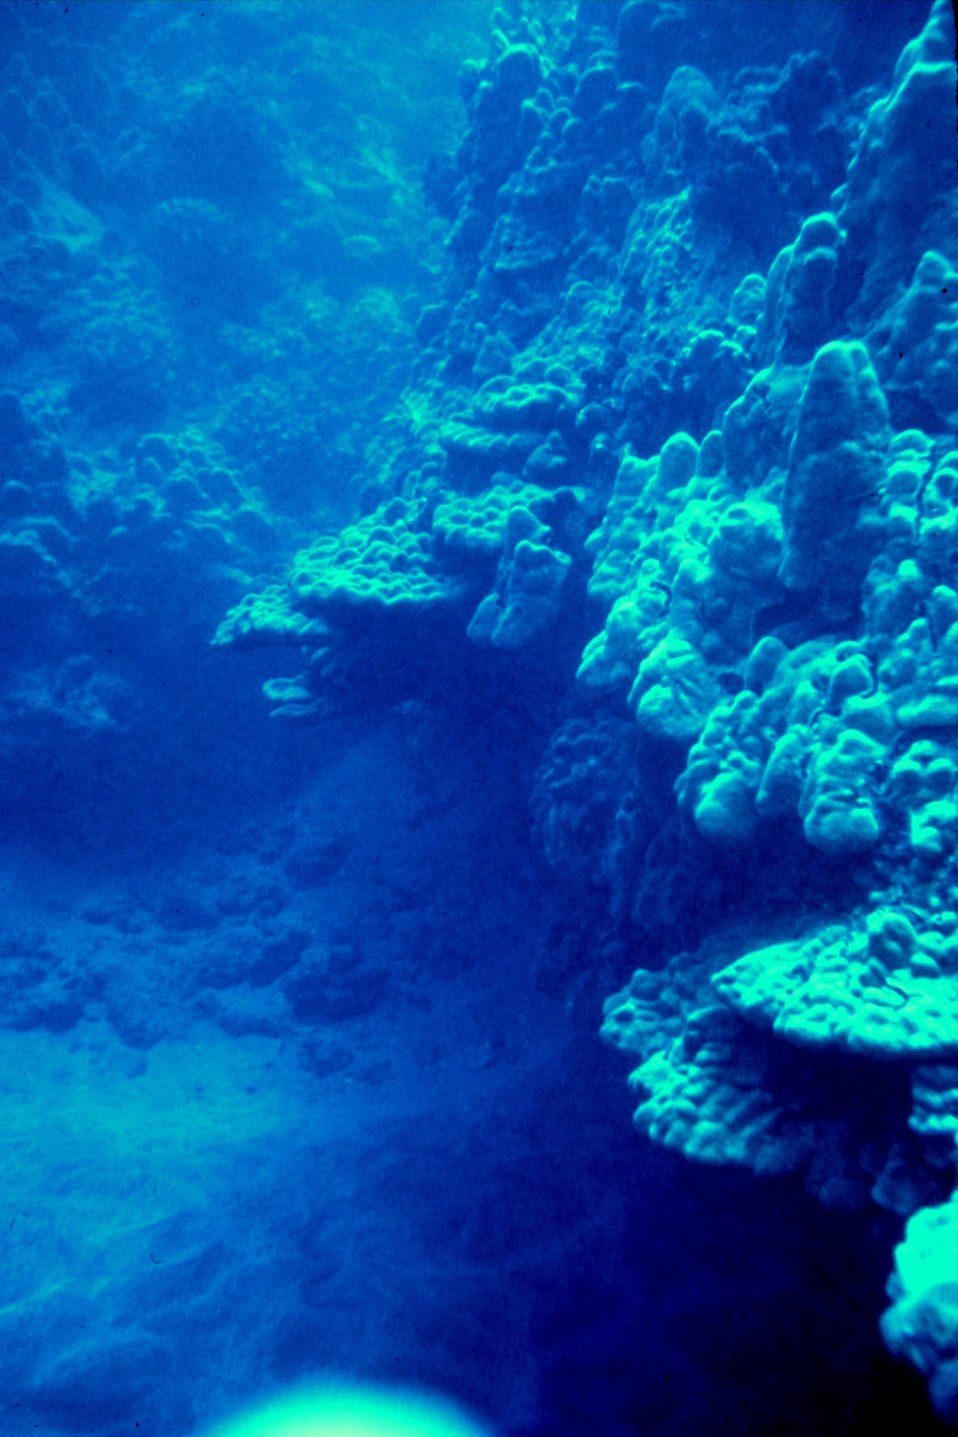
Vertical ledge of massive Porites sp. coral.